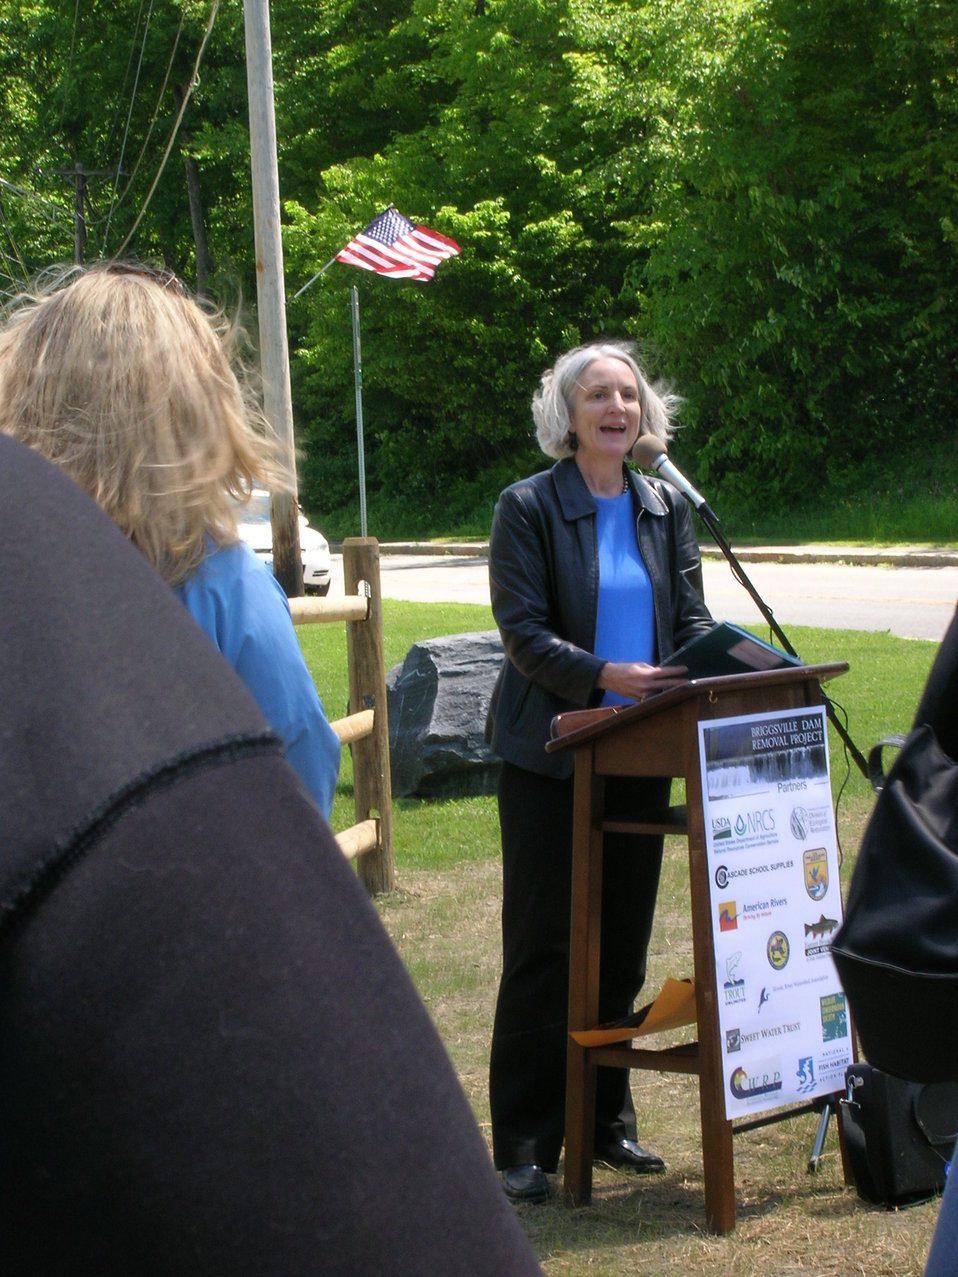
Briggsville Dam Removal Celebration